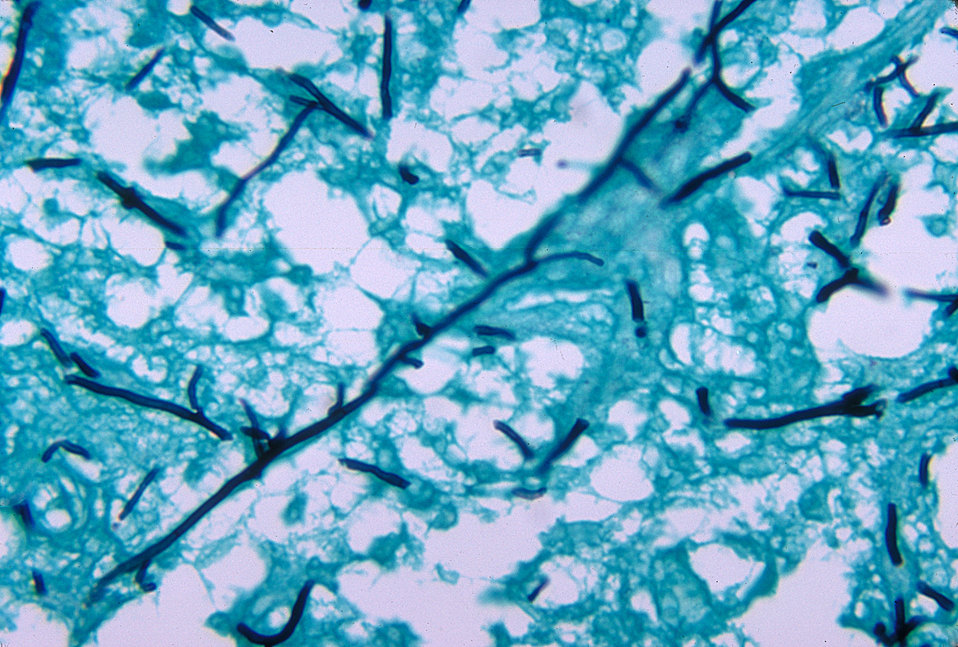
These encephalitic changes found in a 2 week old chicken brain were due to the fungal organism Ochroconis gallopavum, formerly Dactylaria gallopava.